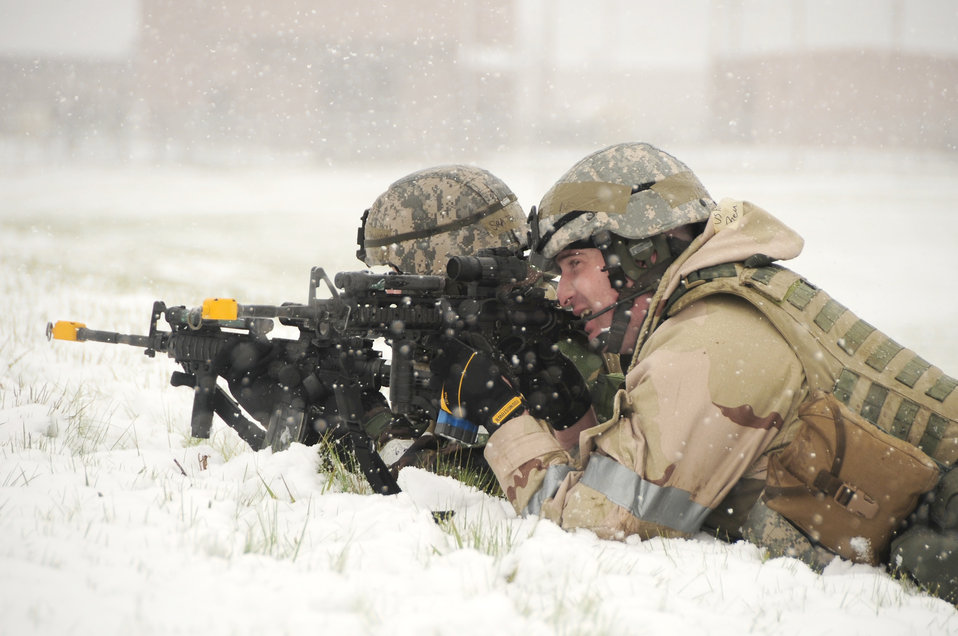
Ellsworth operational readiness exercise

Senior Airman Kristi Terwilliger and Staff Sgt. Benjamin Pieta take aim during an operational readiness exercise May 12, 2010, at Ellsworth Air Force Base, S.D. The Airmen are patrolmen with the 28th Security Forces Squadron.